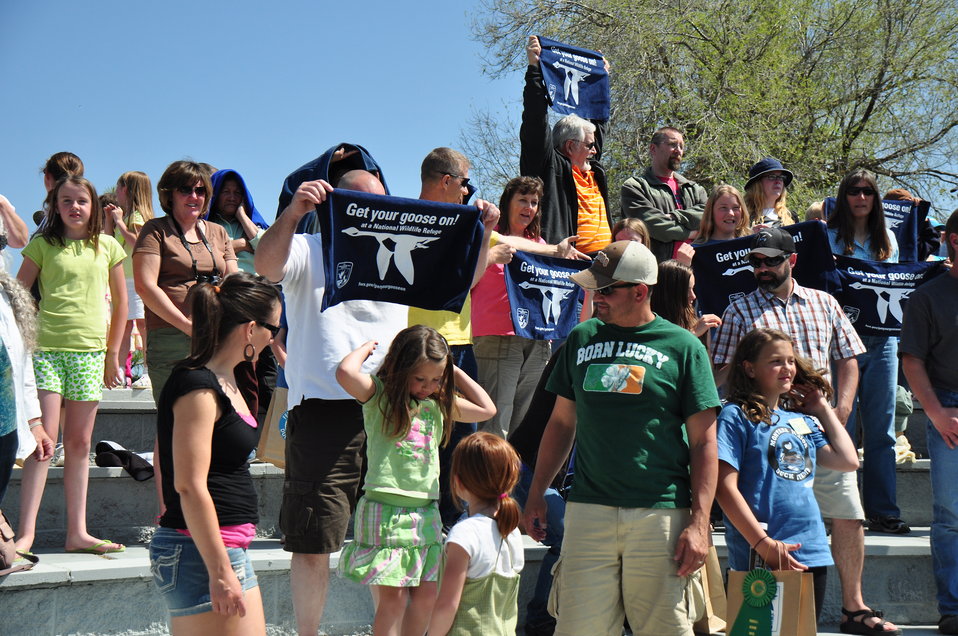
Get Your Goose On!!!

More than 100 people attended the 2012 Montana Junior Duck Stamps award ceremony. The folks pictured here posed with their towels as a videographer captured footage of them screaming, in unison, 'Get Your Goose On!'